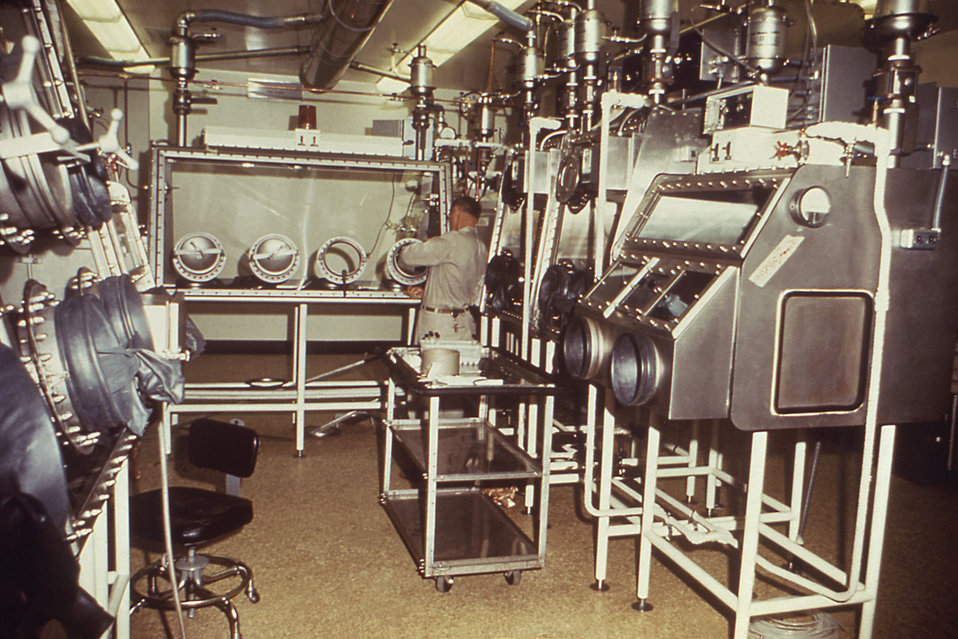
This 1970 image showed former Centers for Disease Control (CDC), Engineering Services staff member, Jesse Herringdine, as he was installing a glove port in a Class III isolation cabinet located inside what was once the organization's Maximum Security Laboratory. Also visible in this view were a number of other containment cabinets, which were airtight, and able to contain highly-pathogenic organisms, allowing for observation, while keeping them from contaminating the laboratory environment.